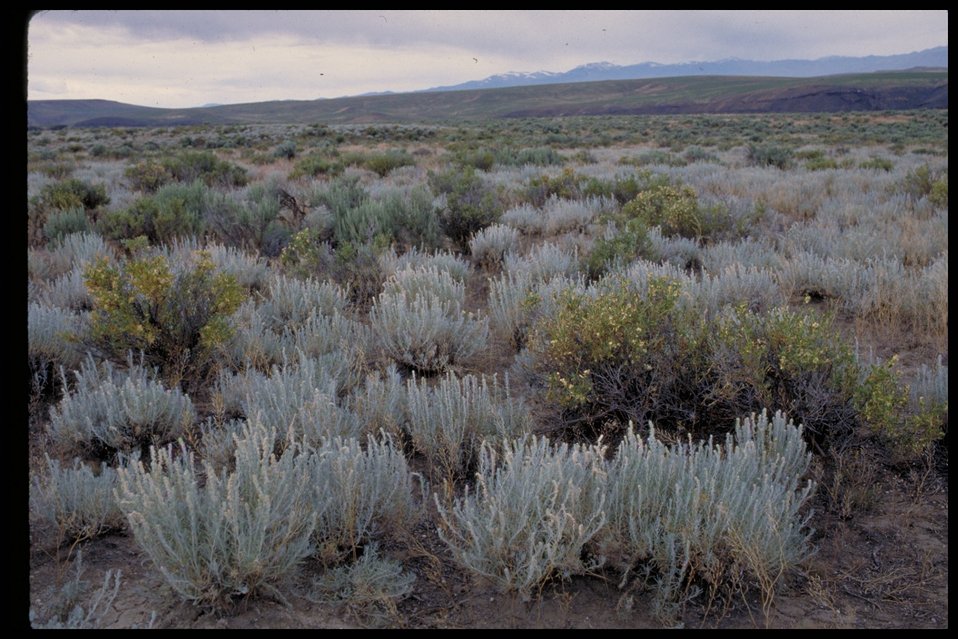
Dedication Point Winterflat vegetation Birds of Prey National Conservation Area BOP Owyhee Field Office LSRD Lower Snake River District